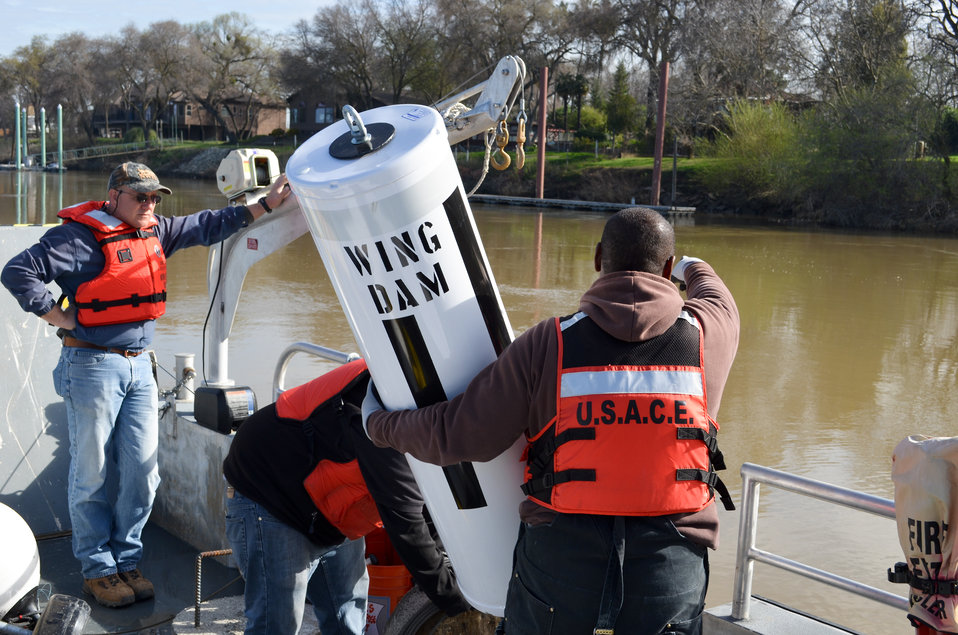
Replacing buoys for safer river navigation

Tony Theard (right) with the U.S. Army Corps of Engineers Sacramento District places a wing dam buoy in the Sacramento River March 21, 2012 near Sacramento, Calif. The buoys warn boaters of underwater structures called wing dams, which slow river bank erosion while helping the river naturally dredge itself.